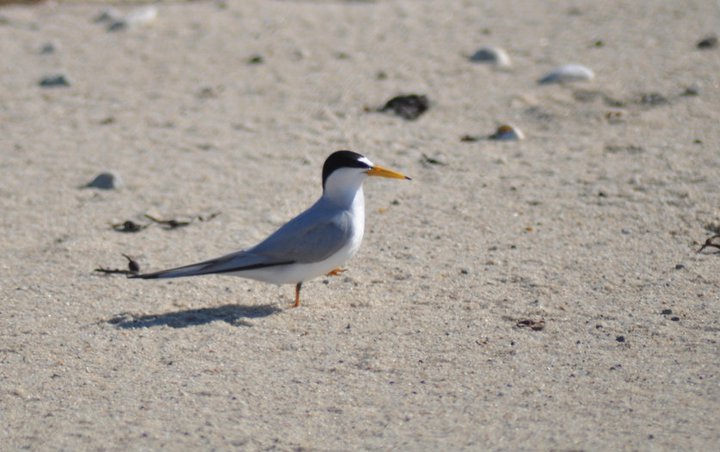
Least Tern

A least tern at the Nantucket National Wildlife Refuge, MA.